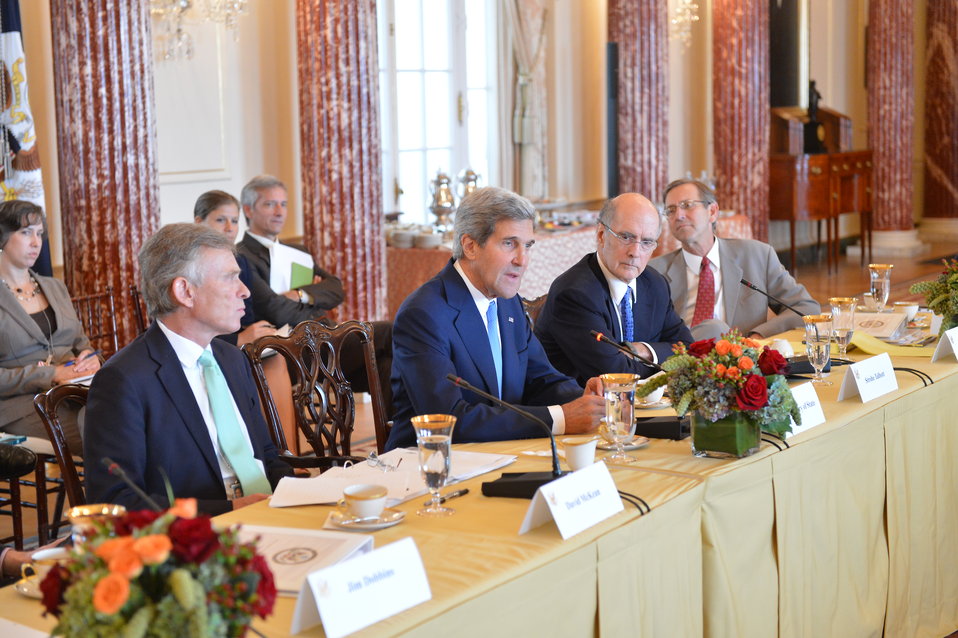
Secretary Kerry Meets with the Foreign Affairs Policy Board

U.S. Secretary of State John Kerry meets with the Foreign Affairs Policy Board at the U.S. Department of State in Washington, DC on September 11, 2013.